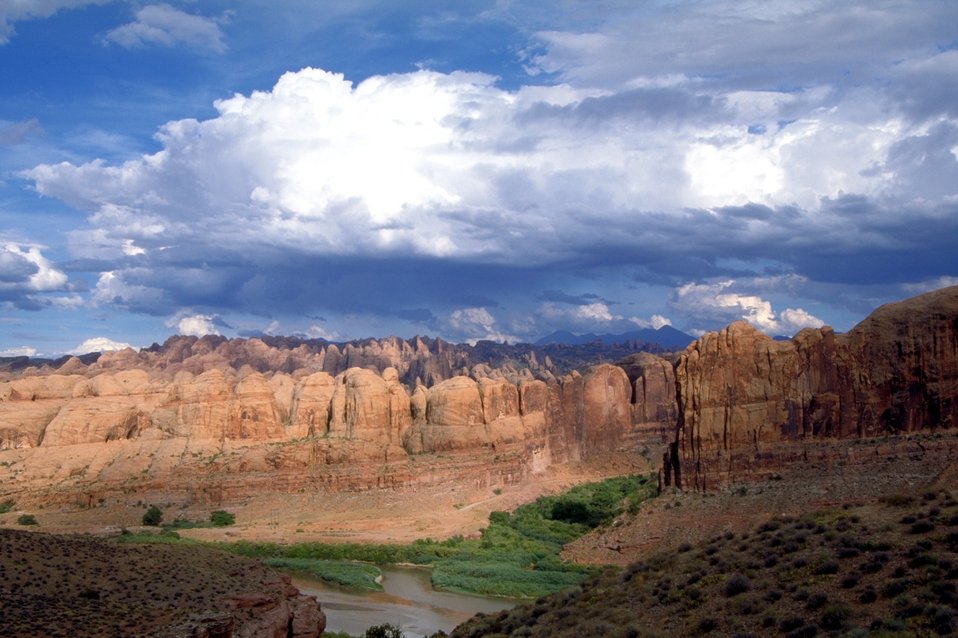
Behind The Rocks and Colorado River near Moab, Utah.